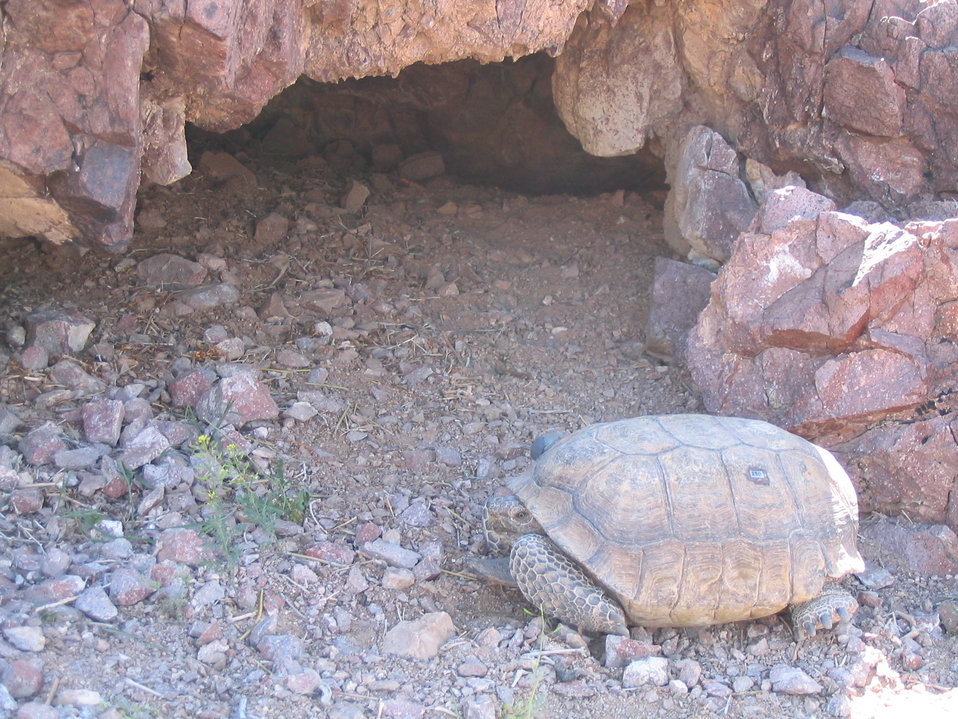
Mojave Desert Tortoise (Gopherus agassizii)

Desert tortoise (Gopherus agassizii) commonly known as the Mojave desert tortoise.